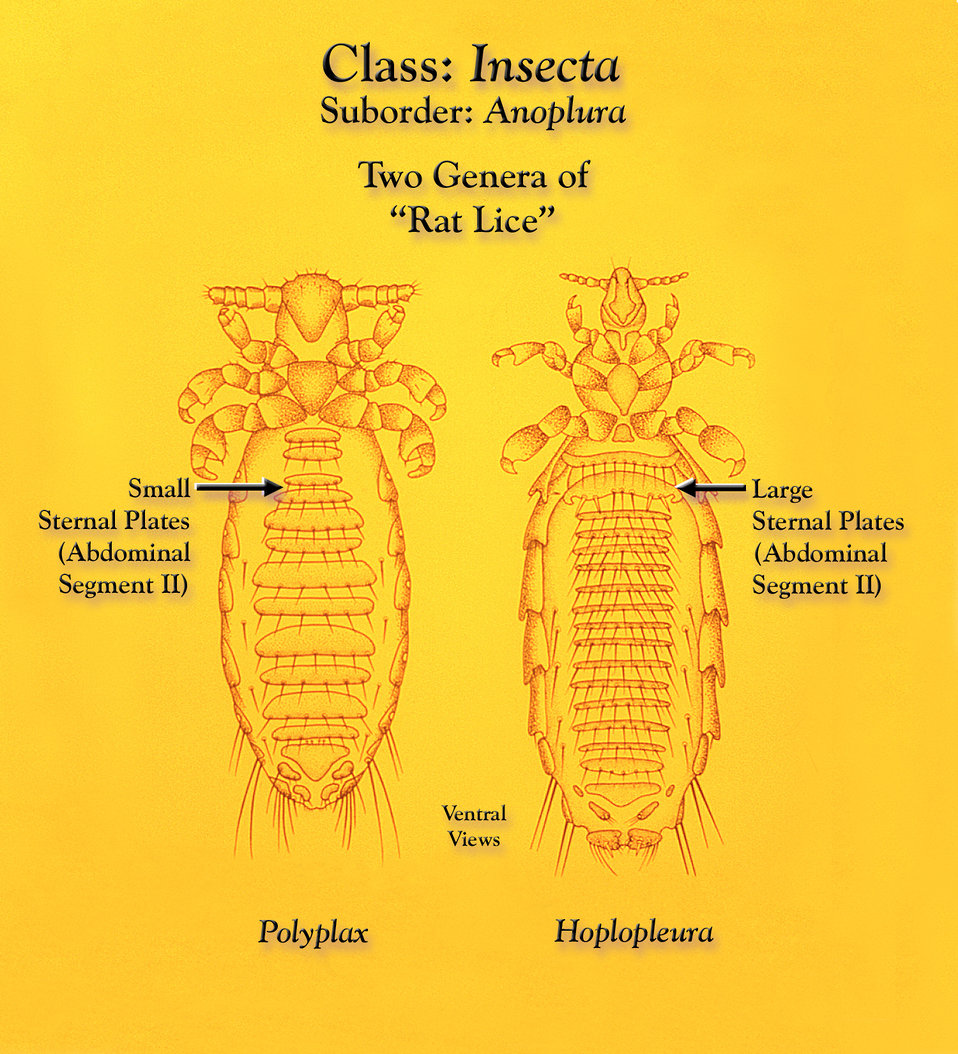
This illustration depicts ventral views of two genera of 'rat lice' that are members of the 'sucking lice' order Anoplura, Polyplax and Hoplopleura.